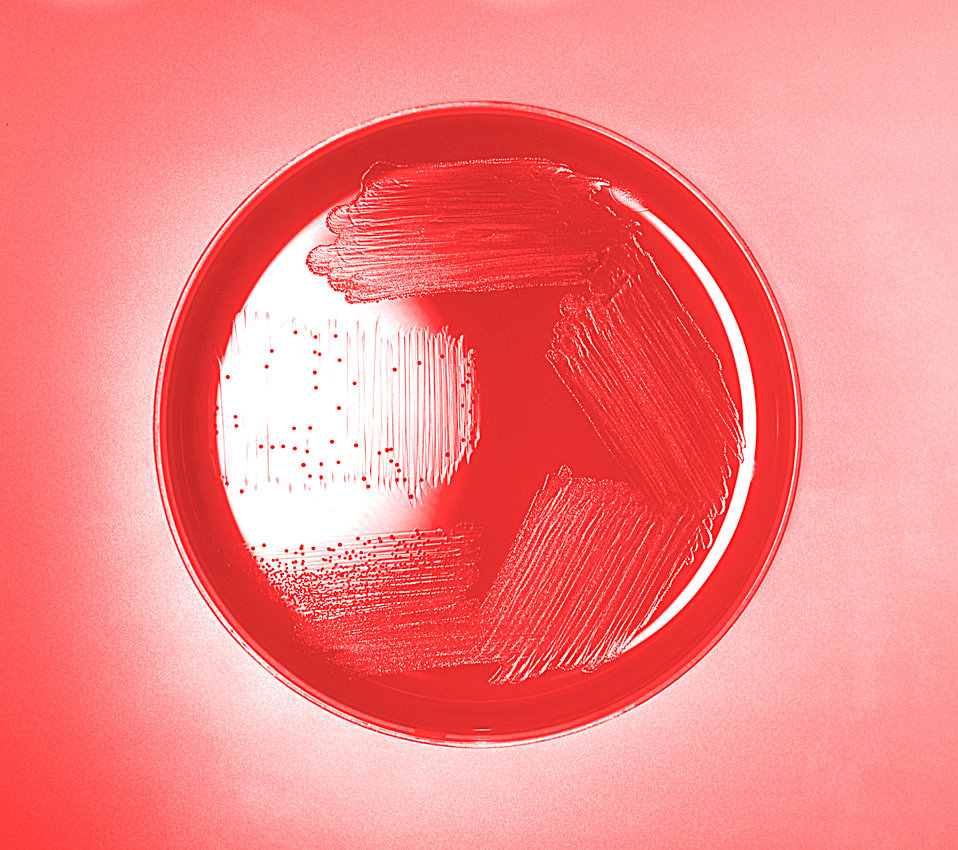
Blood agar plate culture of Haemophilus influenzae.